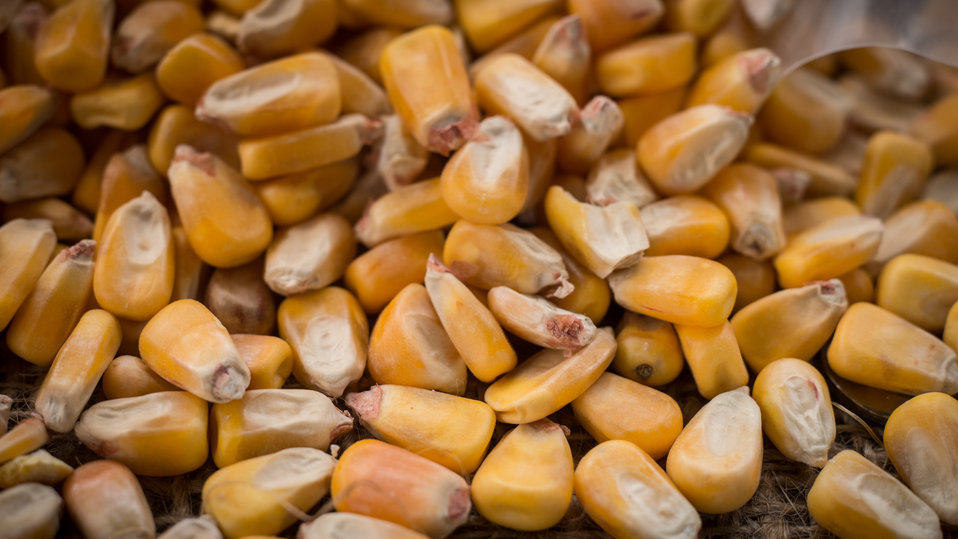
Dry corn at the U.S. Department of Agriculture (USDA) demonstration garden is being ground at the summer farmers market’s final outdoor market of the season at the USDA Whitten Building east parking lot in Washington, DC, on Friday, November 22, 2013.